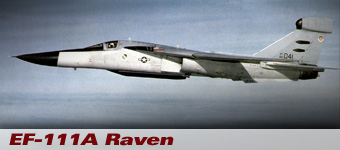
EF-111 Raven

The first operational EF-111A delivered to Mountain Home AFB, Idaho, history spotlight graphic .